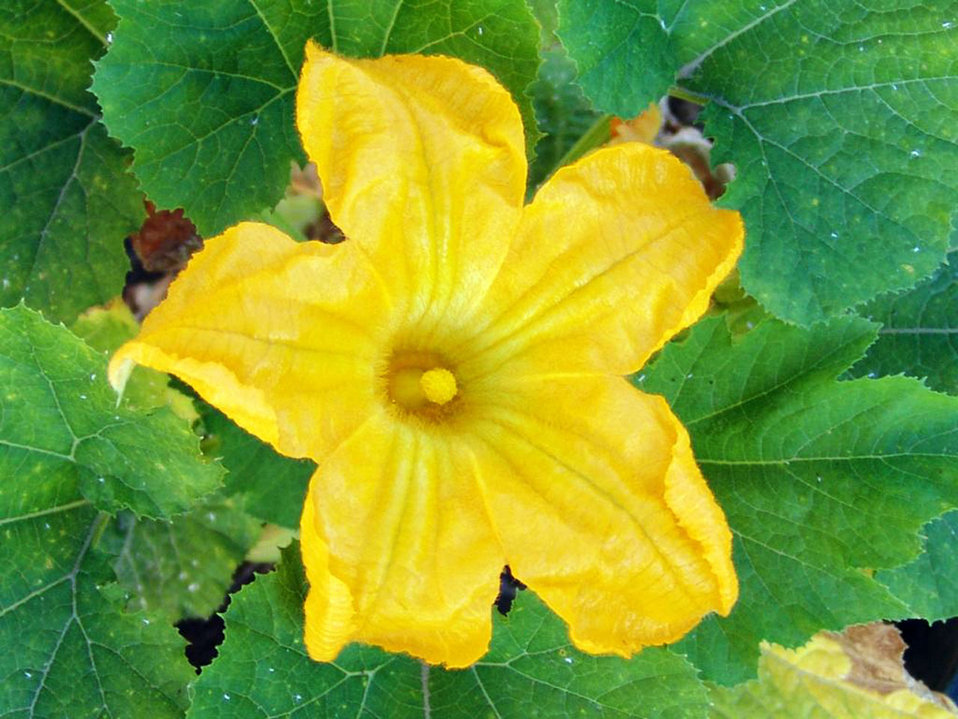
Zucchini flower

Flower from a zucchini plant.